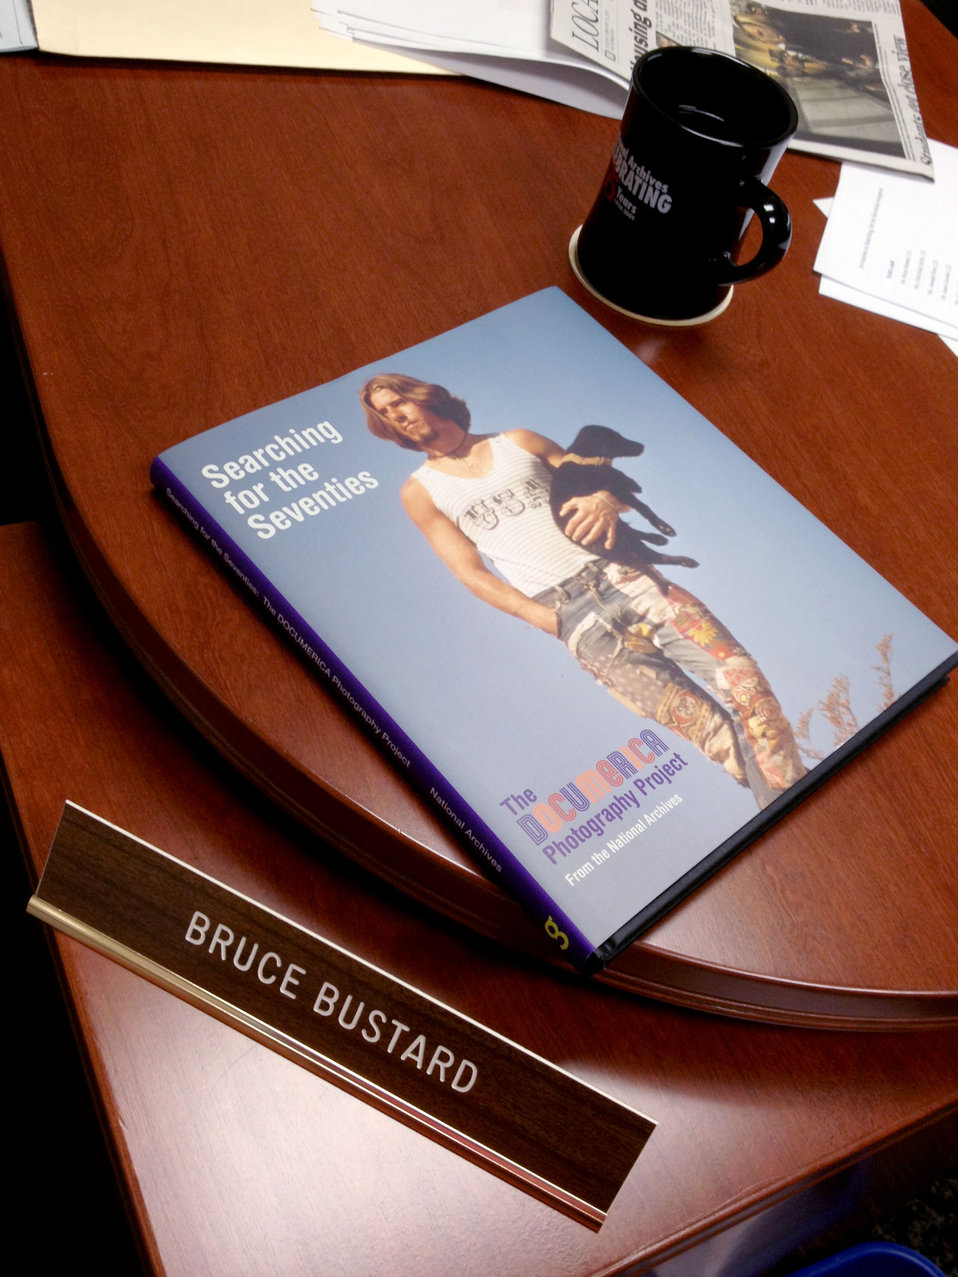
Documerica Catalog Preview

Our Senior Curator has a preview copy of the 'Searching for the Seventies' Exhibition Catalog. It will be available in the Archives Store in March.